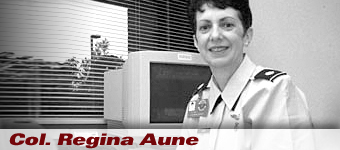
Capt. Lillian K. Keil history spotlight graphic .